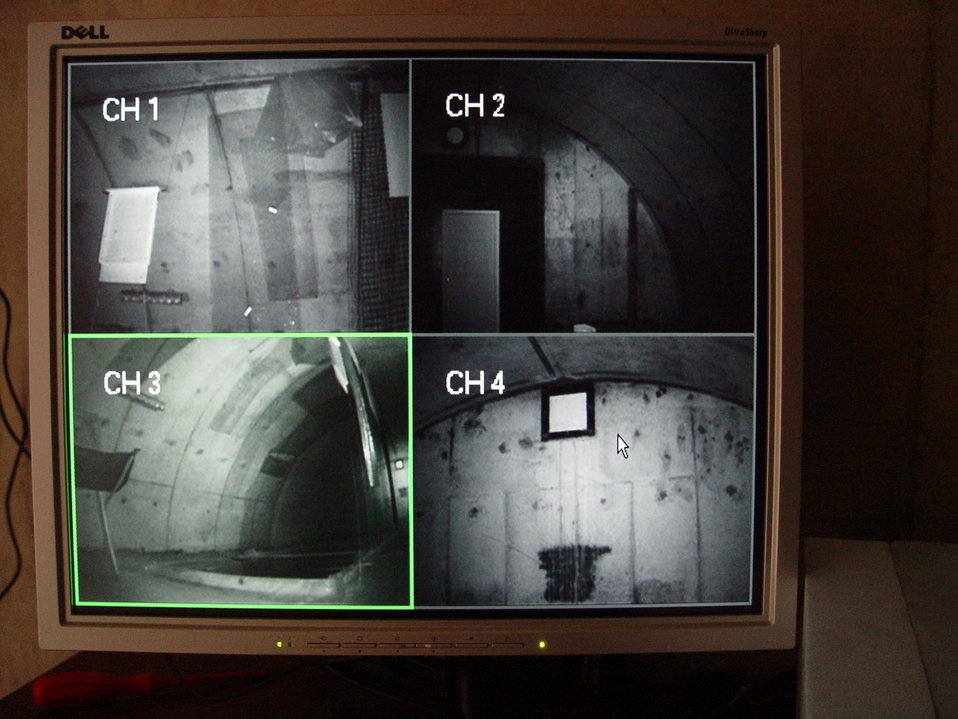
Live feed monitor of bunker interior